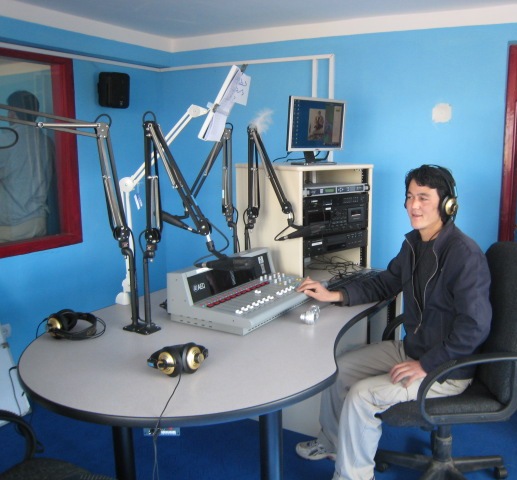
Bamyan Radio-4